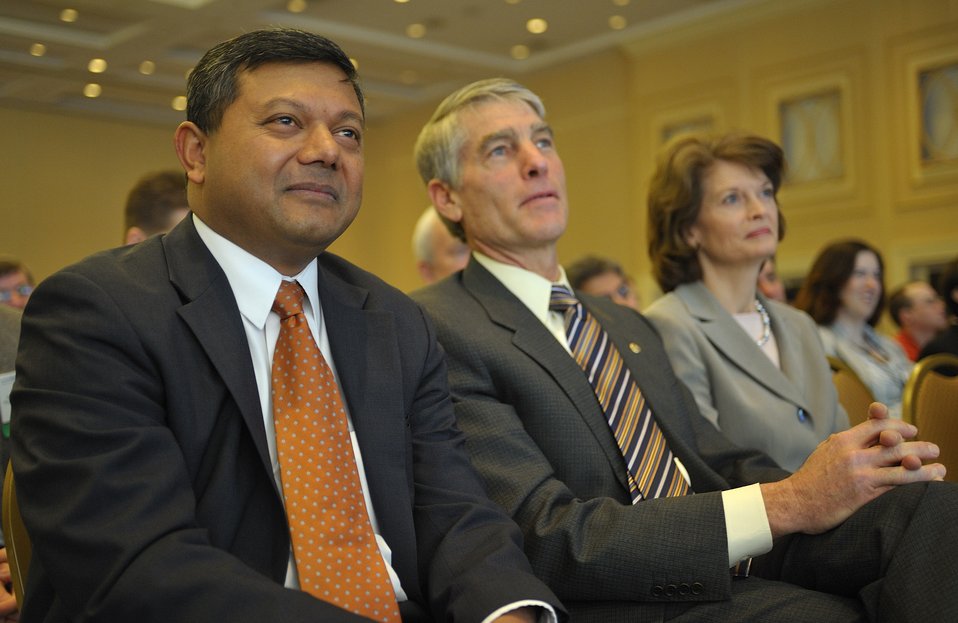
ARPA-E Energy Innovation Summit 2011, 27 of 83

Dr. Arun Majumdar, Director, ARPA-E, Senator Mark Udall (D-CO) and Senator Lisa Murkowski (I-AK) watch Steven Chu, Secretary, United States Department of Energy give his keynote on Tuesday Morning.